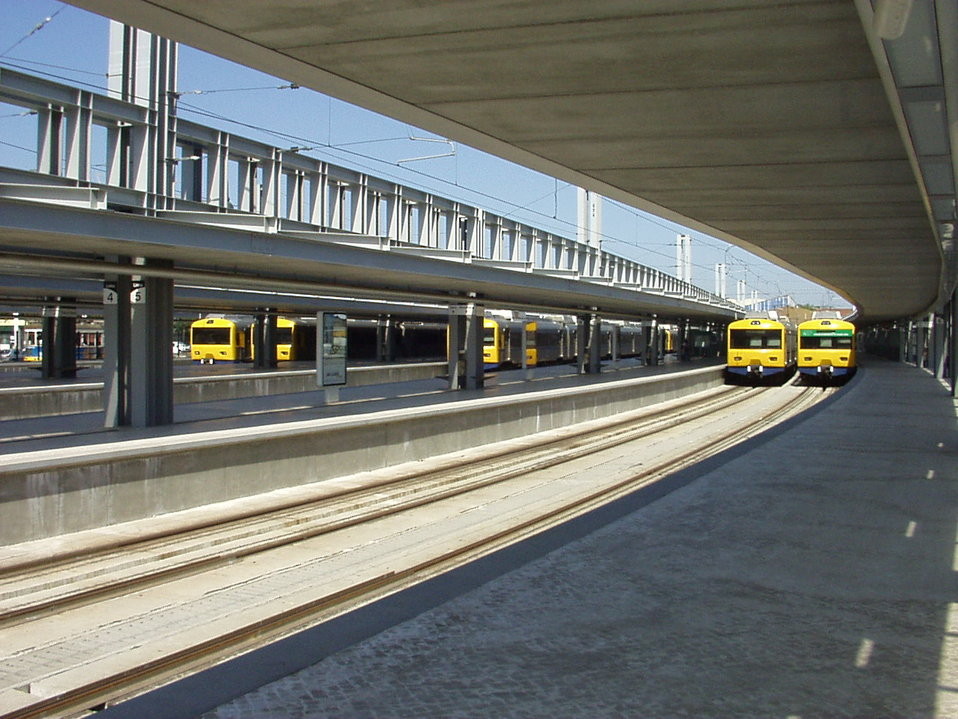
Cais do Sodré railway station in Lisbon Русский: Лиссабон, станция Каиш-ду-Содрэ